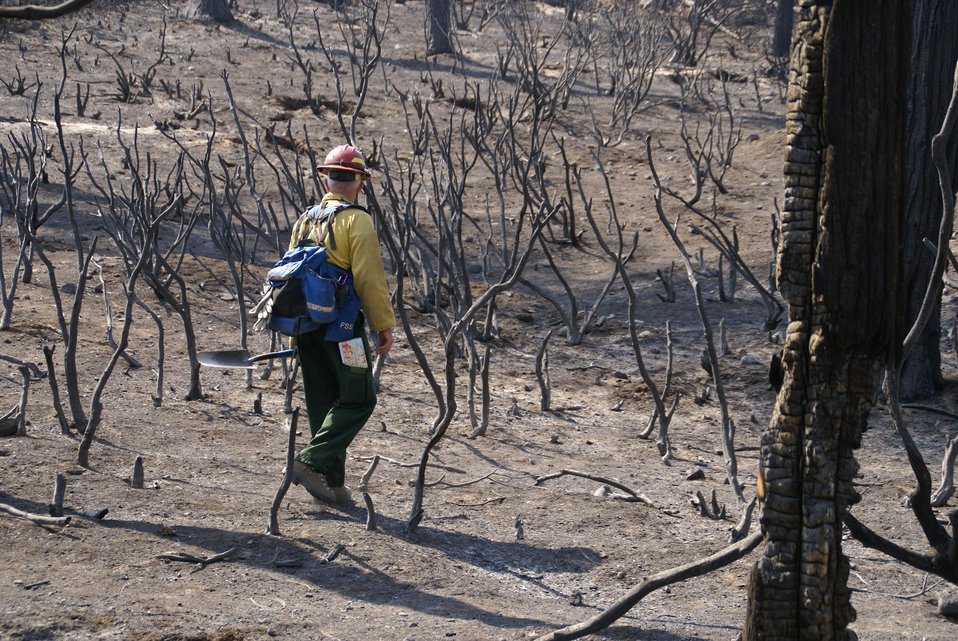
Burned Area Emergency Response (BAER) soil scientist Brad Rust evaluates a burned area on the Rim Fire. BAER teams start work even before the fire is completely extinguished at the Rim Fire. BAER is a rapid assessment of burned watersheds by a BAER team to identify imminent post-wildfire threats to human life and safety property and critical natural or cultural resources on National Forest System lands and take immediate actions to implement emergency stabilization measures before the first major storms. Fires result in loss of vegetation exposure of soil to erosion and increased water runoff that may lead to flooding increased sediment debris flows and damage to critical natural and cultural resources. BAER team members implement seeding and mulching installation to prevent erosion, erect temporary water run-off control structures that will protect recovering areas, and installation of warning signs, replace safety related facilities, remove safety hazards, prevent permanent loss of habitat for threatened and endangered species, and prevent the spread of noxious weeds and protect critical cultural resources. The Rim Fire in the Stanislaus National Forest near in California began on Aug. 17, 2013 and is under investigation. The fire has consumed approximately 256,169 acres and is 84% contained.